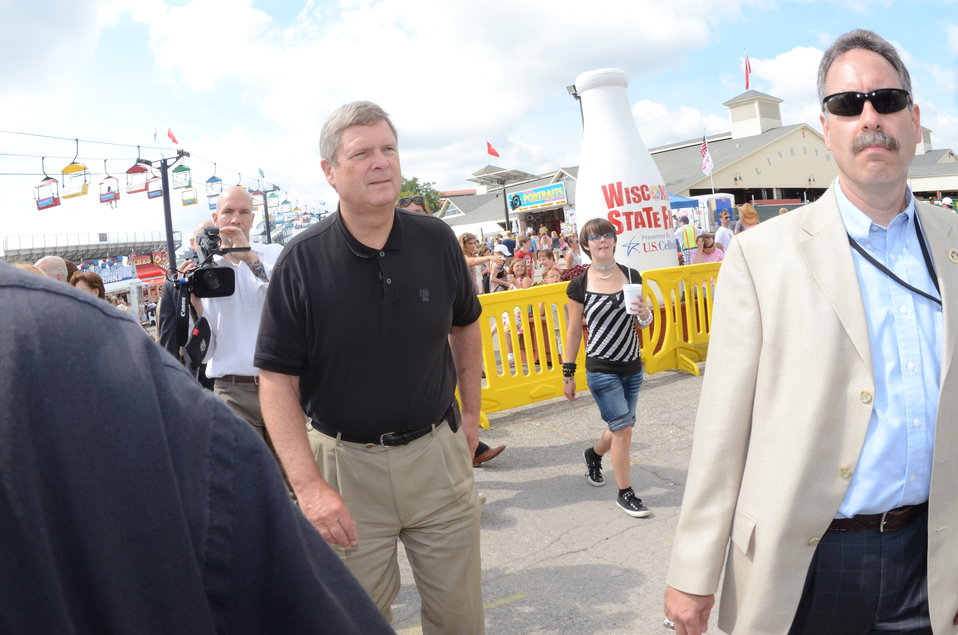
Agriculture Secretary Tom Vilsack at the Wisconsin State Fair in West Allis, WI, on Thursday, August 4, 2011, USDA Photo by Lance Cheung.